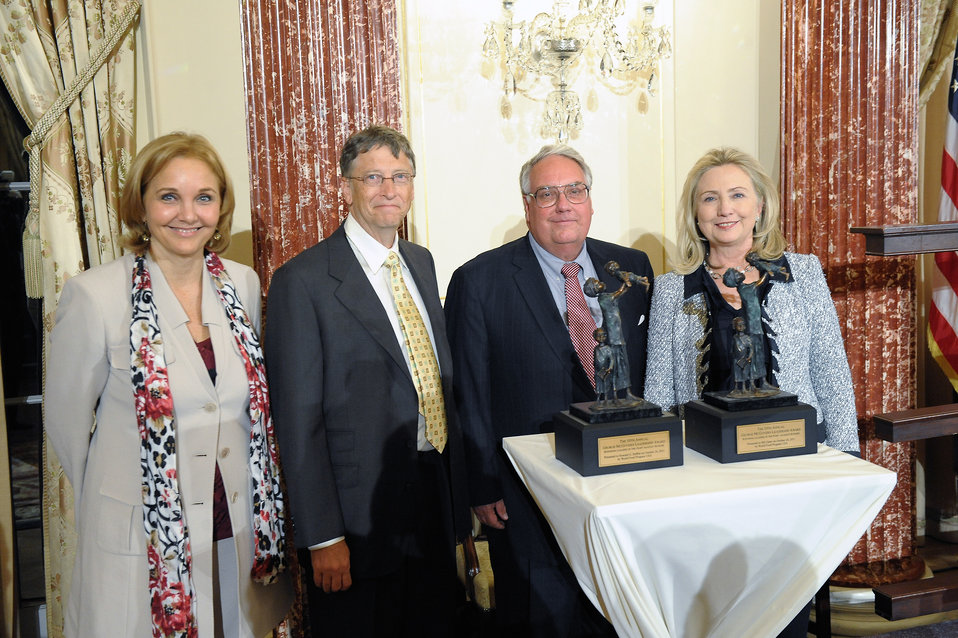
Secretary Clinton Poses for a Photo With Awardees Bill Gates, Howard Buffett, and WFP Executive Director Josette Sheeran

U.S. Secretary of State Hillary Rodham Clinton, right, poses for a photo with the World Food Program’s 2011 George McGovern Leadership Awardees Bill Gates, center left; and Howard Buffett, center right; and World Food Program Executive Director Josette Sheeran, left; at the U.S. Department of State in Washington, D.C., on October 24, 2011.